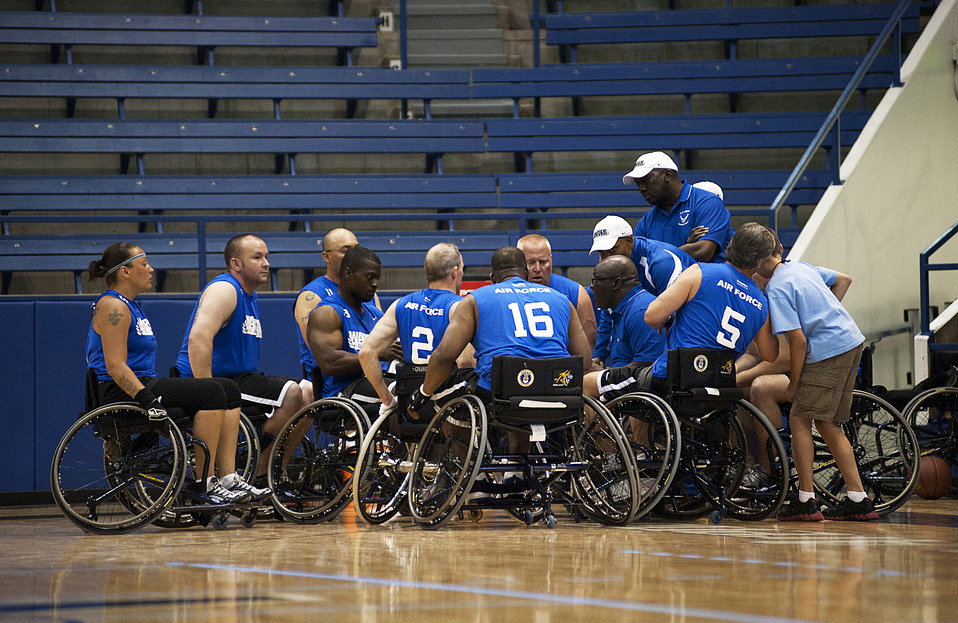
Warrior Games

Members of the Air Force team call timeout during a basketball game against the Marine Corps team May 4, 2012, during the Warrior Games at the U.S. Air Force Academy in Colorado Springs, Colo. The Air Force, which lost to the Marines 37-21, won the bronze medal.